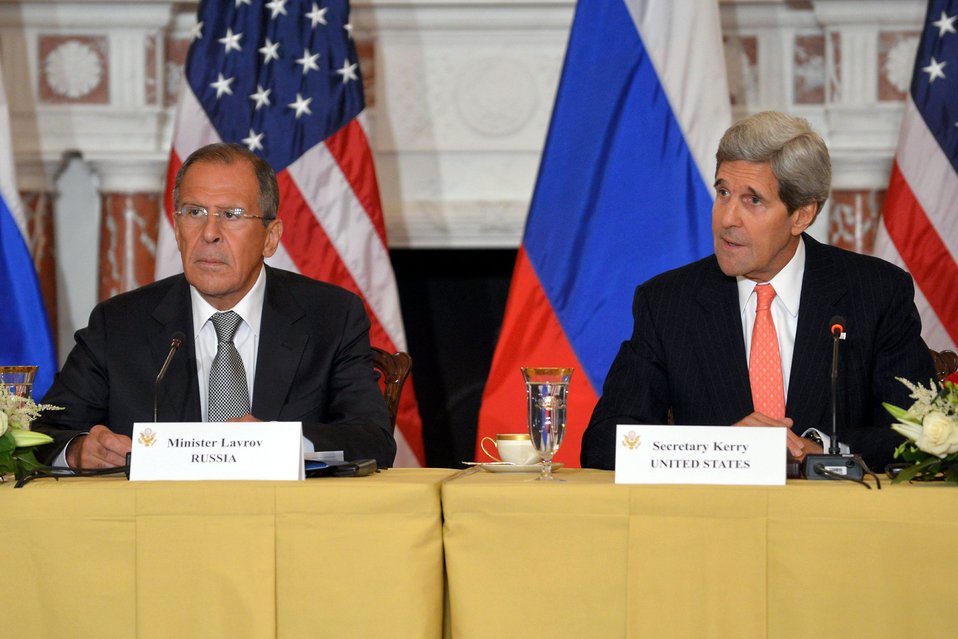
Secretaries Kerry and Hagel Meet With Russian Ministers Lavrov and Shoygu

U.S. Secretary of State John Kerry and U.S. Secretary of Defense Chuck Hagel meet with Russian Foreign Minister Sergey Lavrov and Russian Defense Minister Sergey Shoygu at the U.S. Department of State in Washington, D.C., on August 9, 2013.